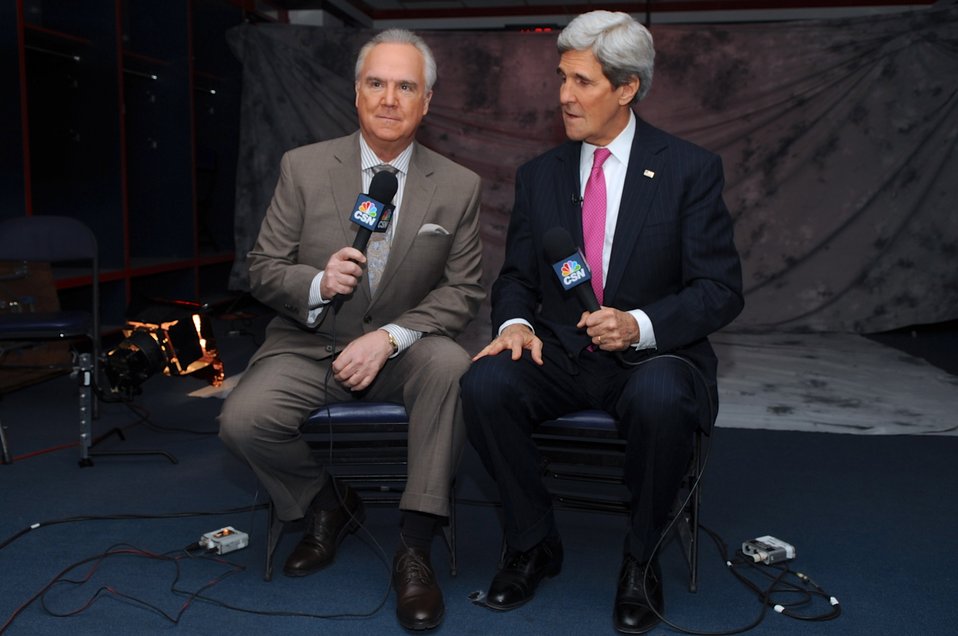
Secretary Kerry is Interviewed by Comcast Sports Network Reporter Koken Before Capitals Game

U.S. Secretary of State is interviewed by Comcast Sports Network reporter Al Koken before dropping the puck and sending off Olympics hockey players as the Caps played the Winnipeg Jets at the Verizon Center in Washington, D.C., on February 6, 2014.